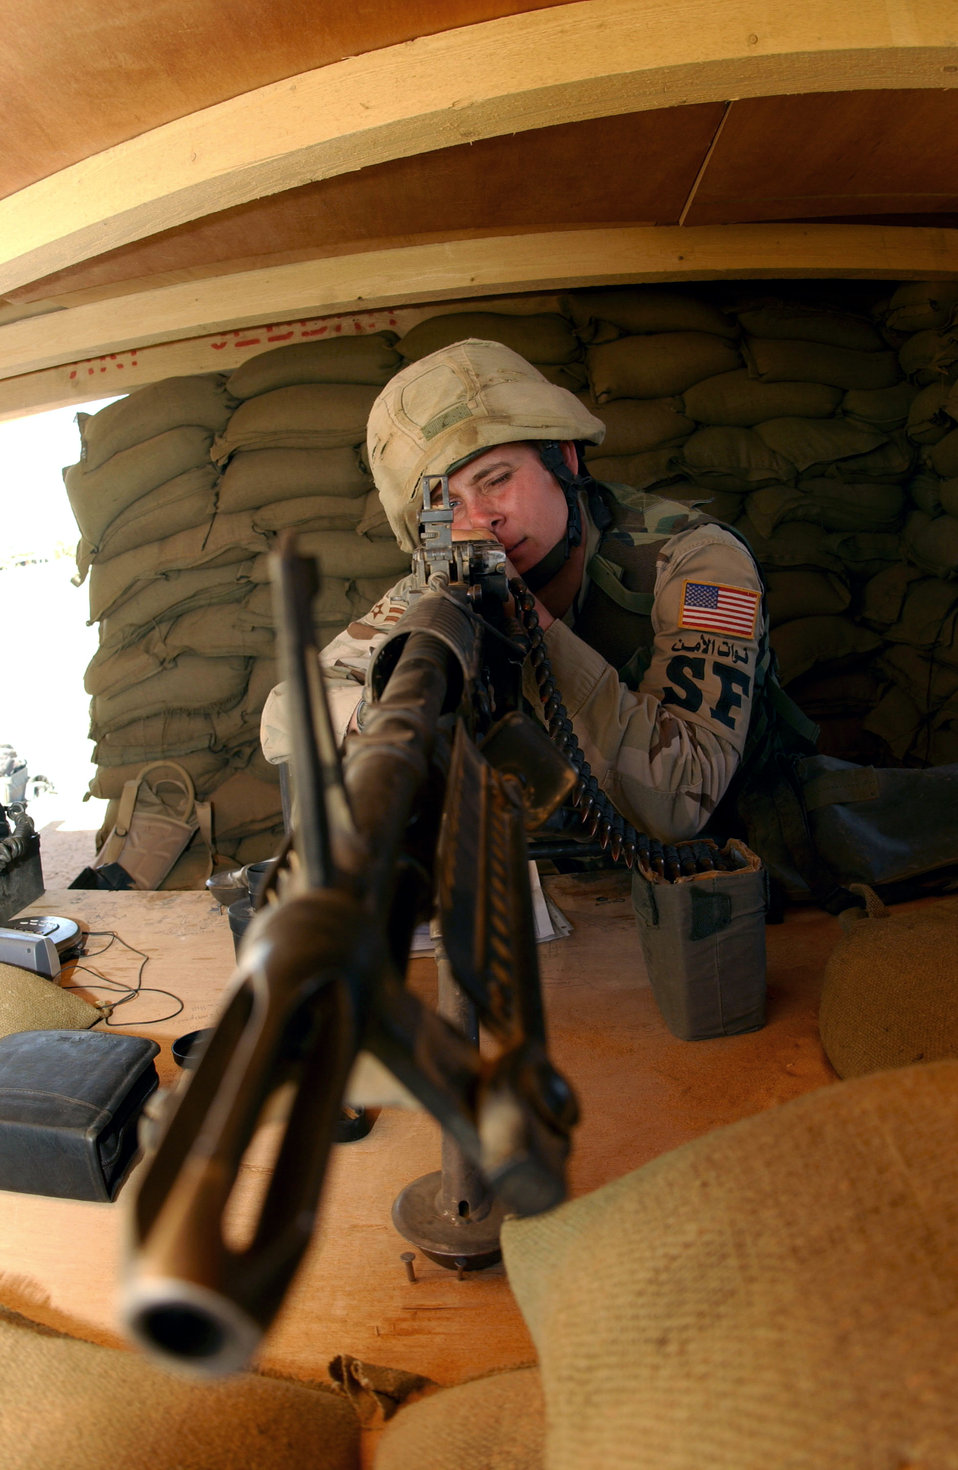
Guardian of the base

OPERATION IRAQI FREEDOM -- Airman 1st Class Peter Casola from the 485th Expeditionary Security Forces Squadron mans an M-60 machine gun at an entry control point at a desert base in Southwest Asia, April 2, 2003. This guard position protects the base from infiltration.